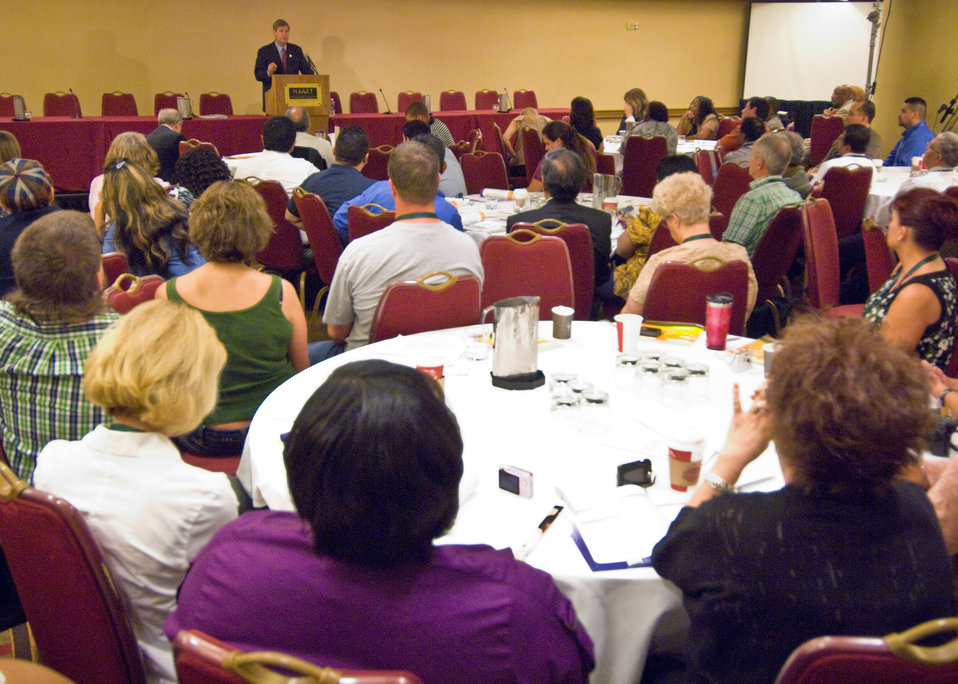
Agriculture Secretary Tom Vilsack speaks to Food Safety Inspection Service employees at the 2010 FSIS Diversity Training Conference in Arlington, Virginia, Tuesday, August 31, 2010. The theme of the conference is 'Diversity in Thought, Unity in Purpose.' The reason for the conference is to improve civil rights for clients and employees. USDA Photo 10di1475-12 by Bob Nichols.